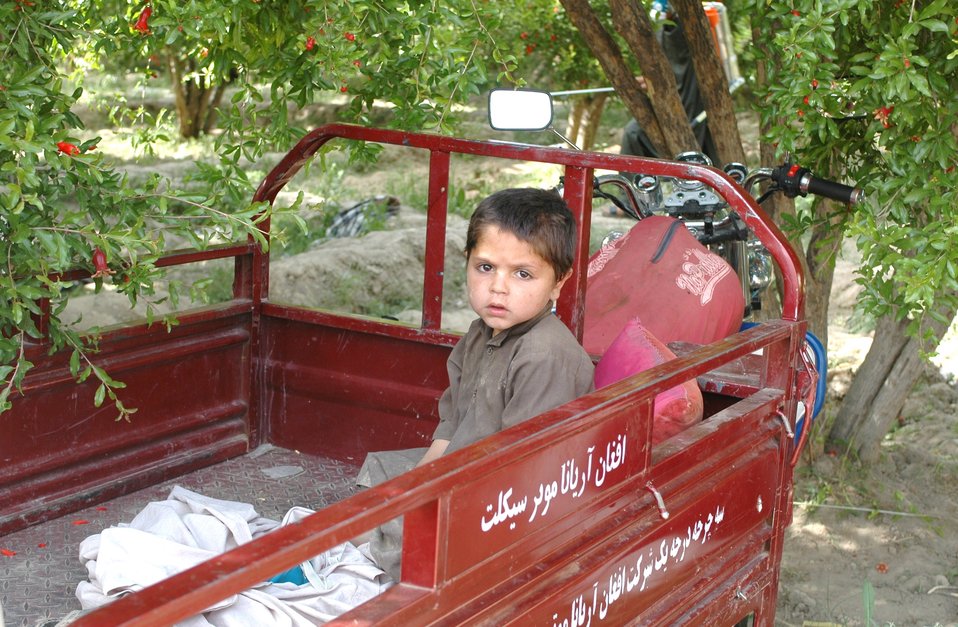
Dr Shah Visits Argandab April 10, 2010